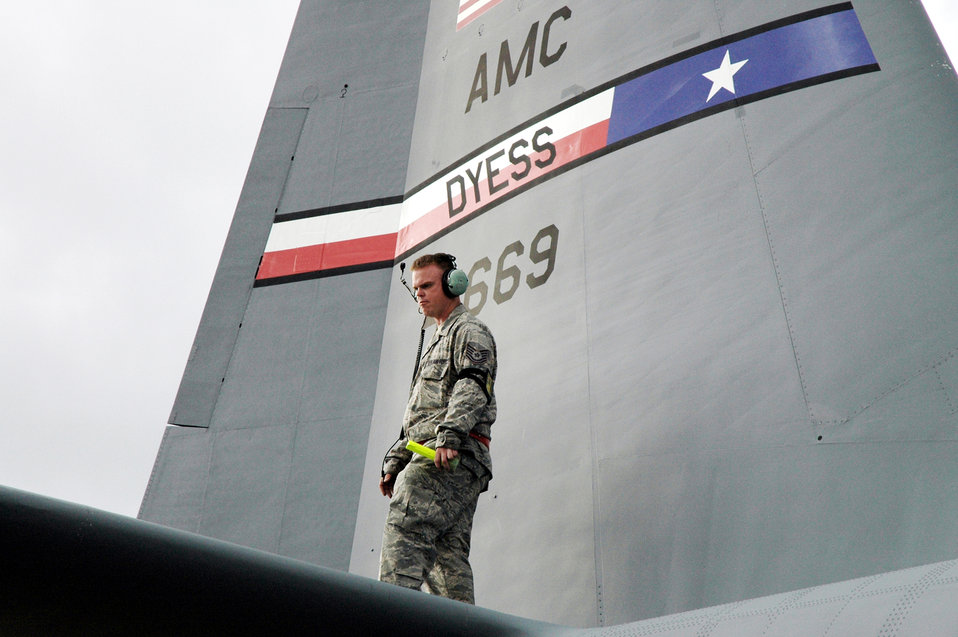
A view from the top

An Airman from the 317th Airlift Group inspects a C-130 Hercules before a humanitarian mission Jan. 17, 2010. The C-130 crew from Dyess Air Force Base, Texas, was supporting Operation Unified Response efforts following the earthquake in Haiti Jan. 12.